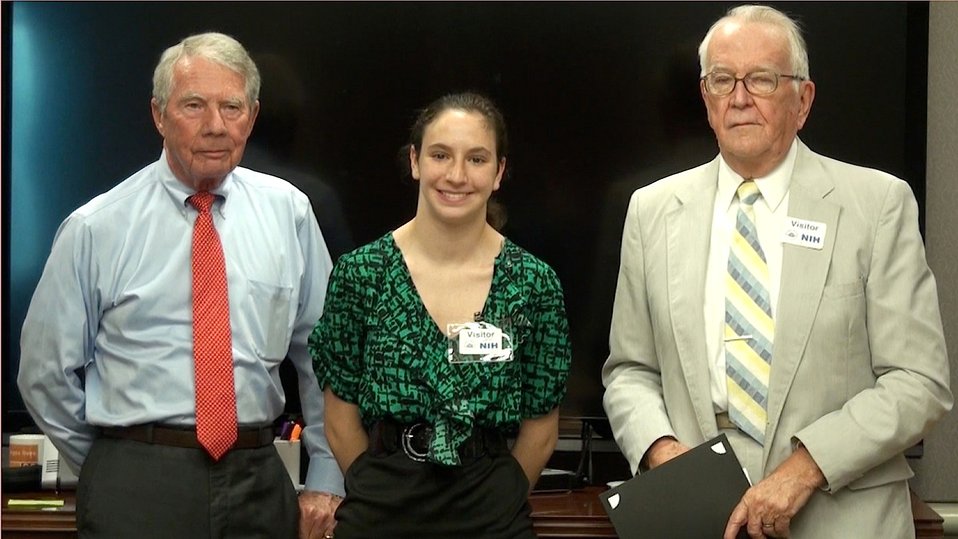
130813-NIDA-Gili Rusak

Friends of NIDA’s Charles O’Keefe (L) and Bill Dewey (R,) gives award to Gili Risak, (Honorable Mention.)